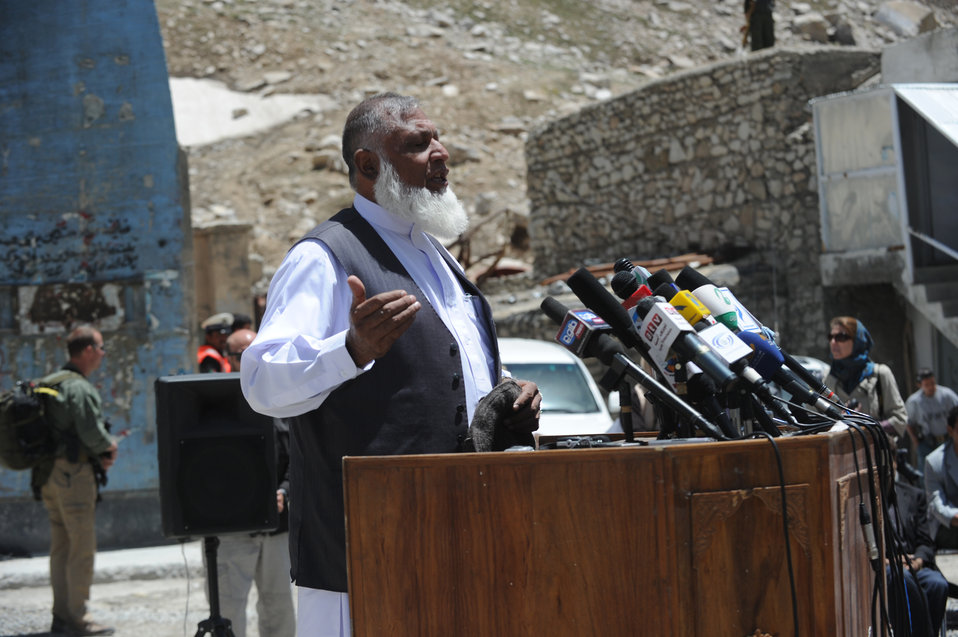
Baghlan Governor Mohammad Akbar Barakzai makes remarks during a ceremony to mark the beginning of renovations at the Salang Tunnel on the border of Parwan and Baghlan Provinces, Afghanistan, on Wednesday, June 15, 2011. (S.K.Vemmer/Department of State)